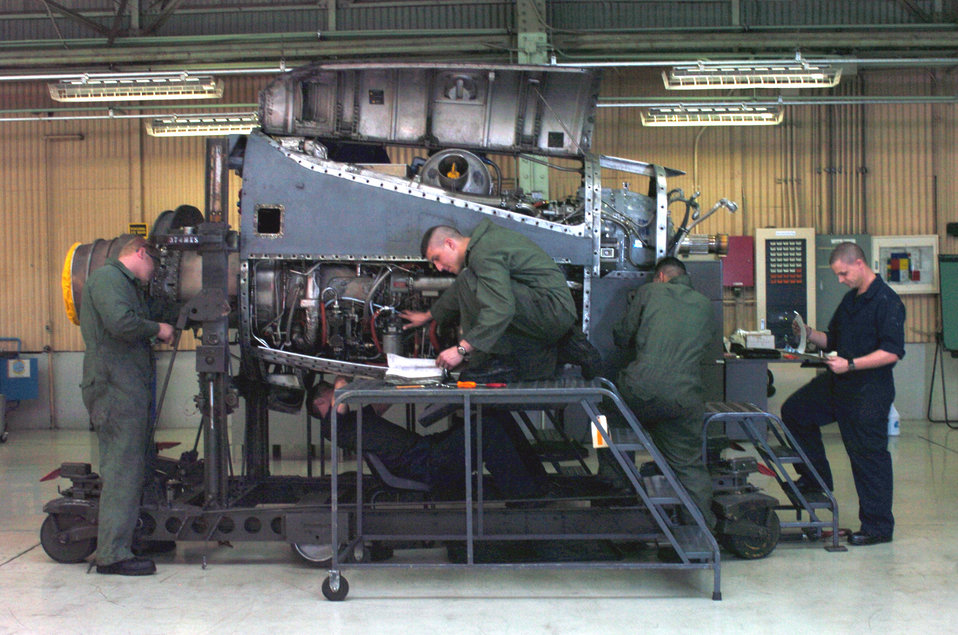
Engine's lookin' good!

YOKOTA AIR BASE, Japan -- Maintainers perform a routine inspection on a C-130 Hercules engine situated on a test stand. Regional repair center workers here inspect and repair all C-130 engines within Pacific Air Forces. The Airmen are all with the 374th Maintenance Squadron.